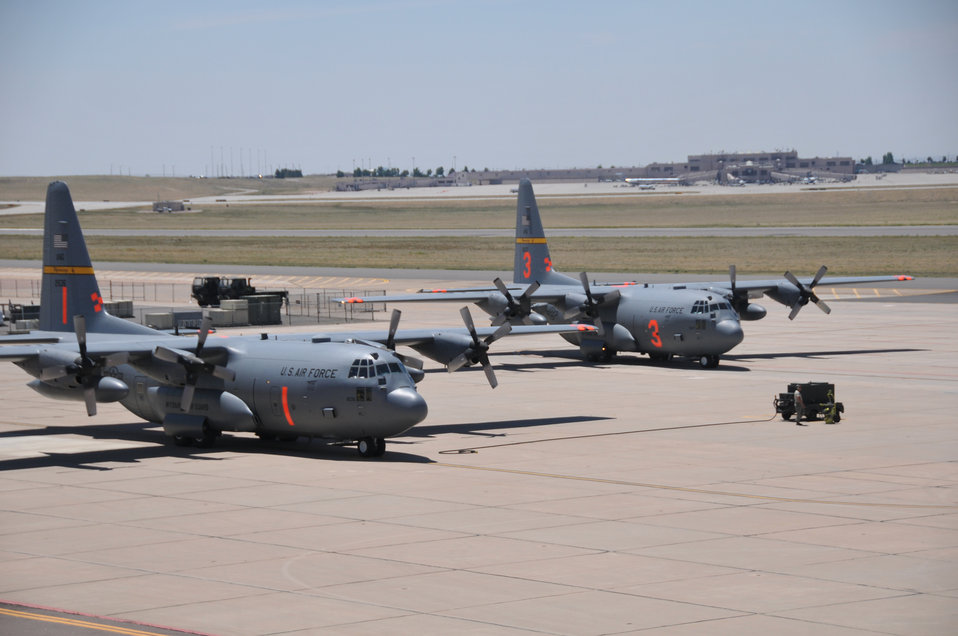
Colorado Wildfire

Airmen and MAFFS-equipped C-130s assigned to the 153rd Airlift Wing, Cheyenne, Wyo., arrive at Peterson Air Force Base, Colo., to provide support to ongoing Colorado firefighting efforts. The 153rd Airlift Wing, along with the 302nd Airlift Wing, have been tasked to provide the requested MAFFS support in the state.